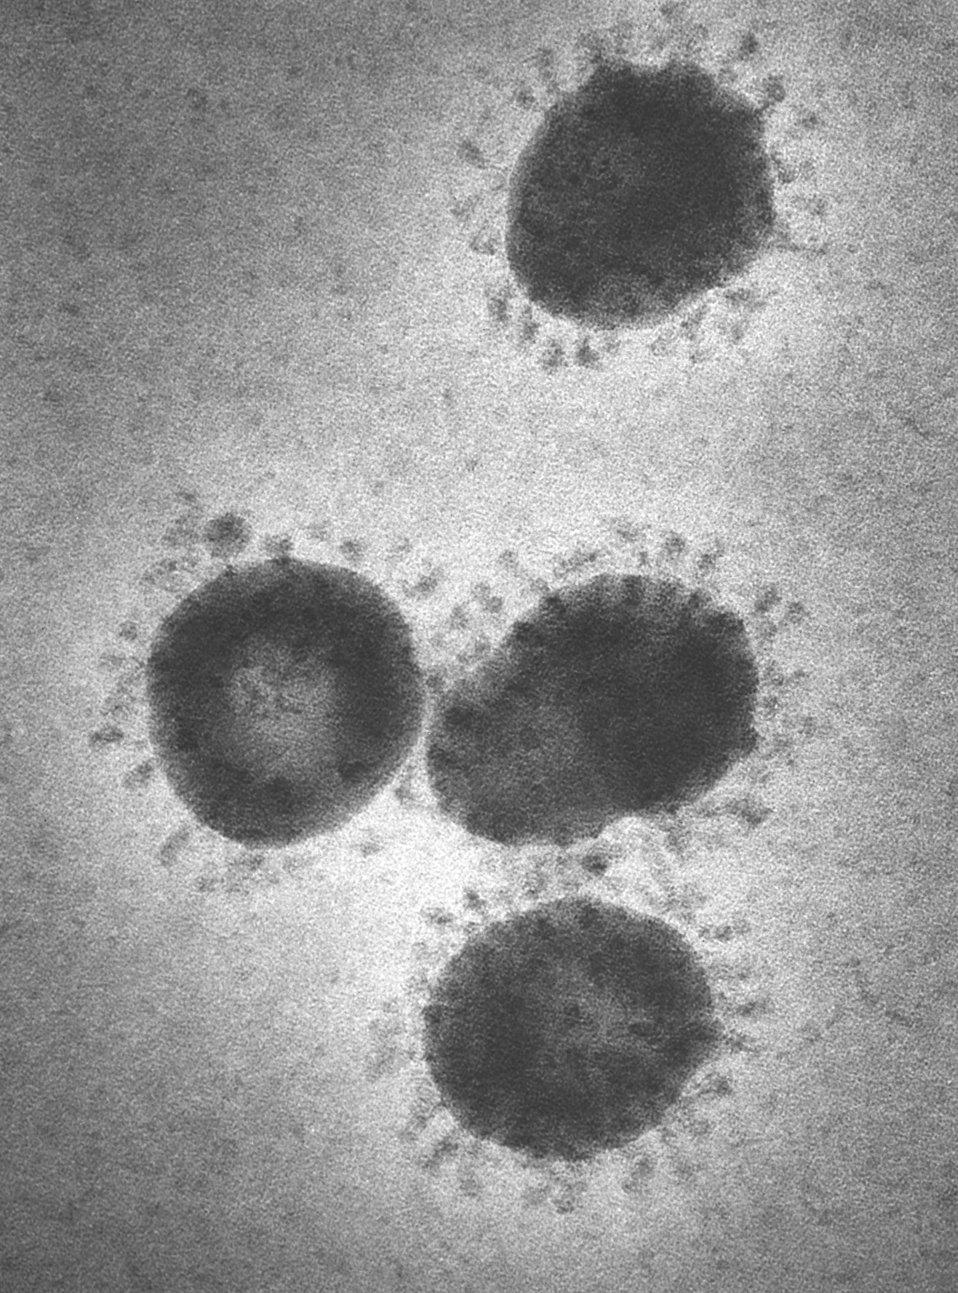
This 1975 transmission electron micrograph (TEM) revealed the presence of a number of infectious bronchitis virus (IBV) virions, which are Coronaviridae family members, and members of the genus Coronavirus. IBV is a highly contagious pathogen, which infects poultry of all ages, affecting a number of organ systems including the respiratory and urogenital organs. IBV is categorized as a Group 3 coronavirus member, with a helical genome composed of positive-sense single-stranded RNA (( ) ssRNA). This is an enveloped virus, which means that its outermost covering is derived from the host cell membrane.